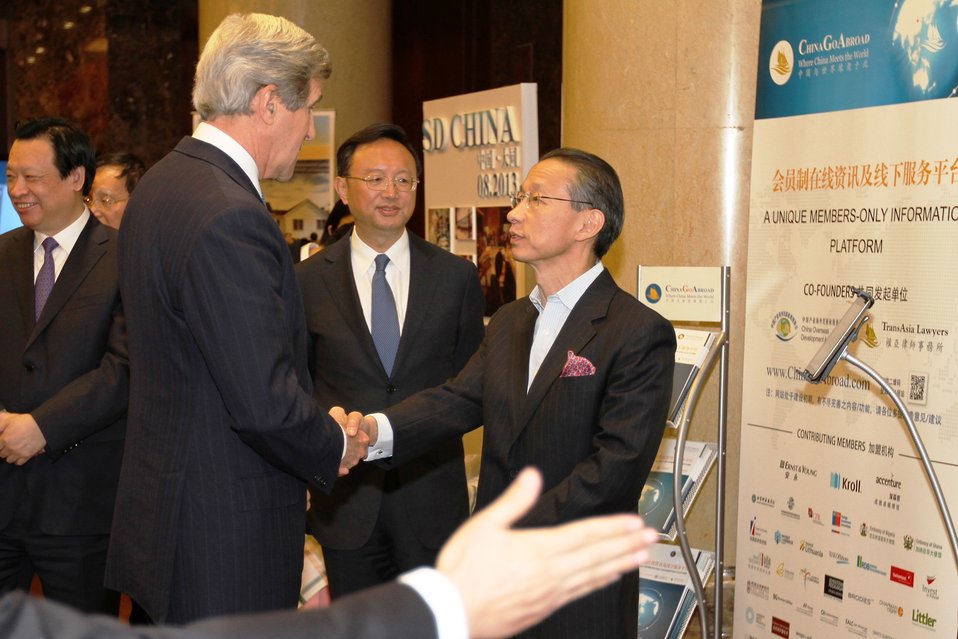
Secretary Kerry Tours Exhibit of Energy and Environmental Projects by U.S. and Chinese Companies

U.S. Secretary of State John Kerry and Chinese State Councilor Yang Jiechi explore interactive exhibits highlighting energy and environmental projects by U.S. and Chinese companies in Beijing, China, on April 13, 2013.